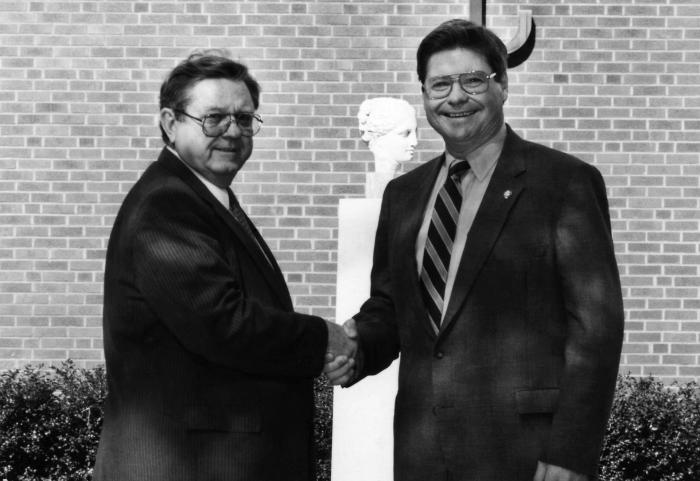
This 1989 photograph depicted Vernon N. Houk, M.D. (left), former Director of the Center for Environmental Health at the Centers for Disease Control, as he was greeting Ben Jones (D-GA), a Georgia Congressional Representative during the Congressman's visit to the CDC.